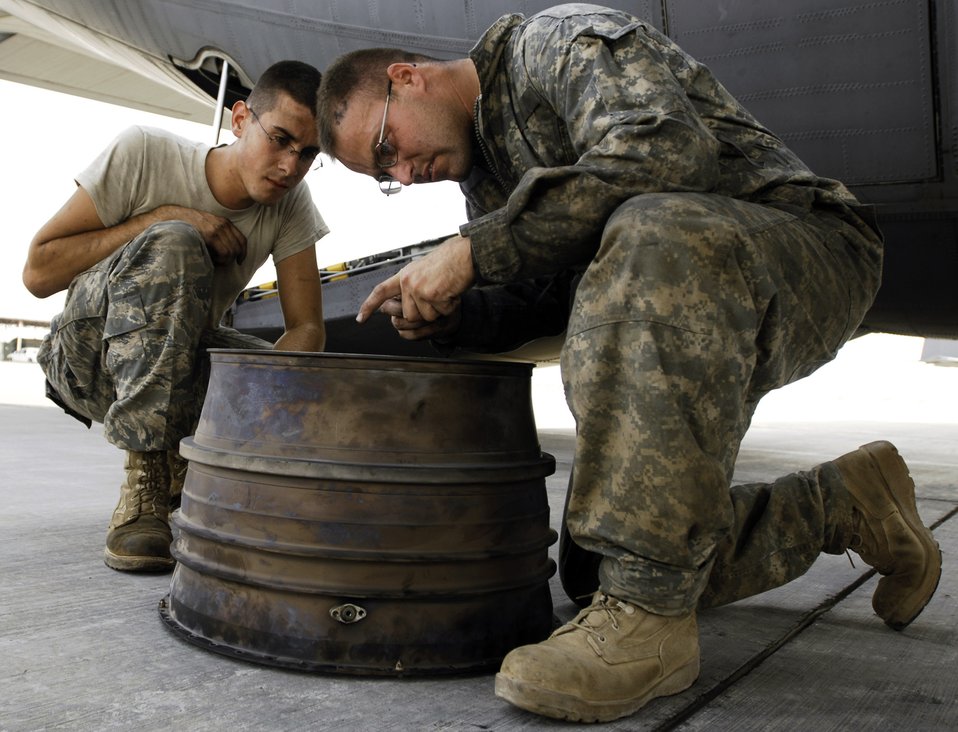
An ounce of prevention

Senior Airman Sean Sweeney (left) Staff Sgt. Robert Crow and identify a crack along the rear bearing support of a C-130 Hercules engine during a post-flight inspection Aug. 22 at Joint Base Balad, Iraq. Sergeant Crow and Airman Sweeney are aerospace propulsion technicians with the 777th Expeditionary Aircraft Maintenance Squadron and are deployed from Little Rock Air Force Base, Ark. Sergeant Crow's hometown is Fort Worth, Texas. Airman Sweeney's hometown is Columbia, N.J.